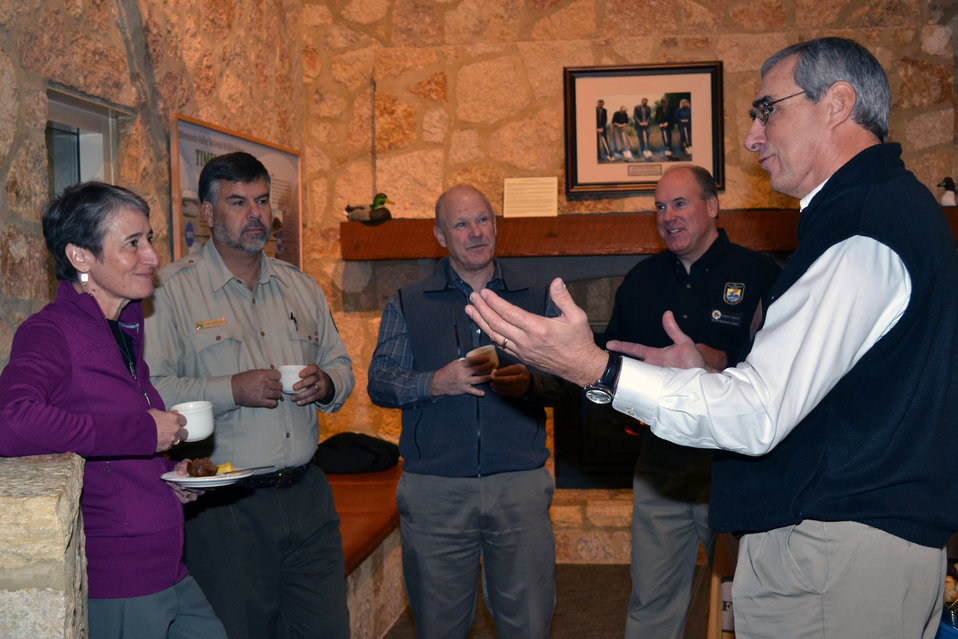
Morning Briefing